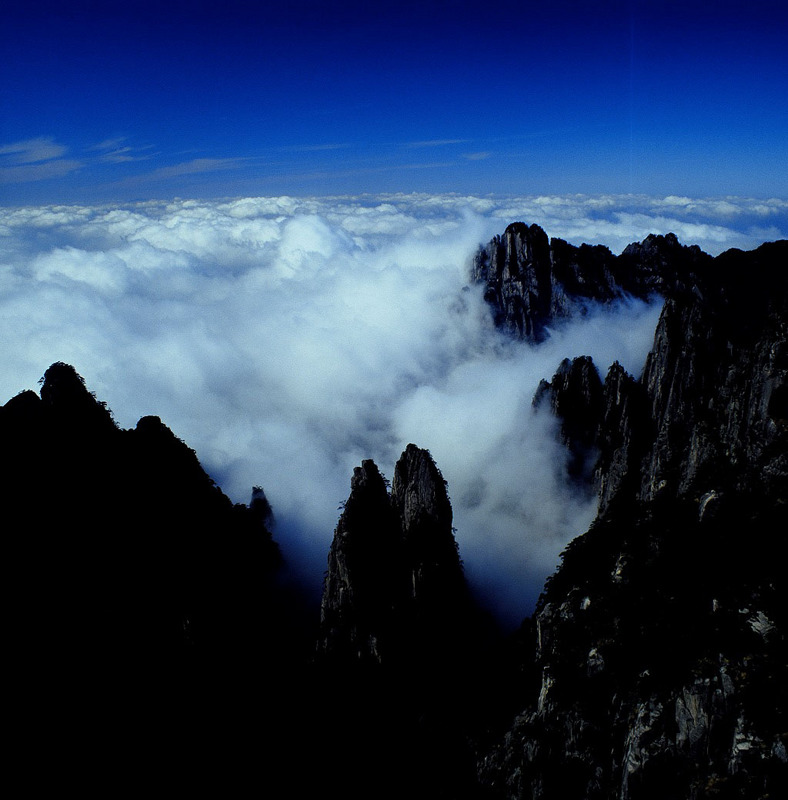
Uploaded by request of Hu Fusheng

Taken in Huangshan, China

Our environment must be protected in order to have clean air and blue sky.